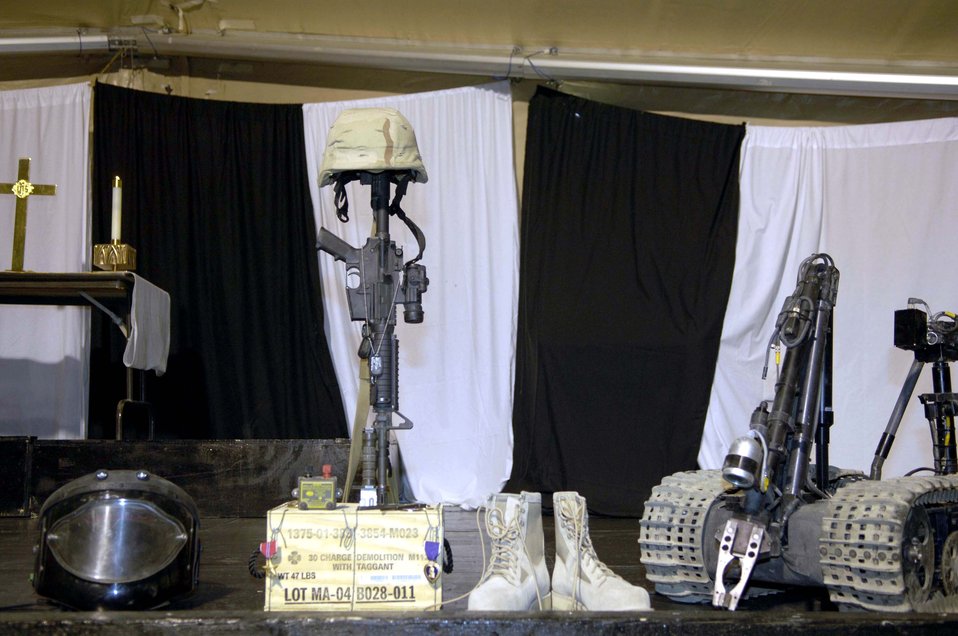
Airmen, Soldiers say farewell to comrade in Iraq

A memorial honors Master Sgt. Brad A. Clemmons, a veteran explosive ordnance disposal technician, during a service Aug. 24. Sergeant Clemmons died Aug. 21 when his vehicle struck an improvised explosive device near Taji, Iraq.